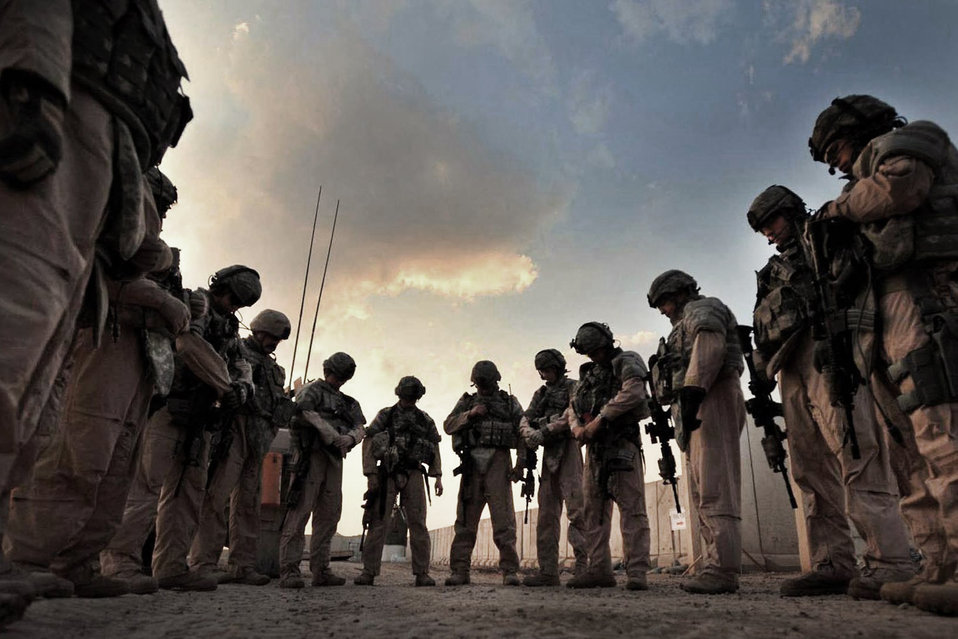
Security forces unit provides combat support to Iraq

Airmen group together for a prayer, a tradition, prior to every mission outside the wire at Forward Operating Base Falcon located in southern Baghdad, Iraq, November 2008. The Airmen are assigned to Detachment 3, 732nd Expeditionary Security Forces Squadron at the forward operating base.